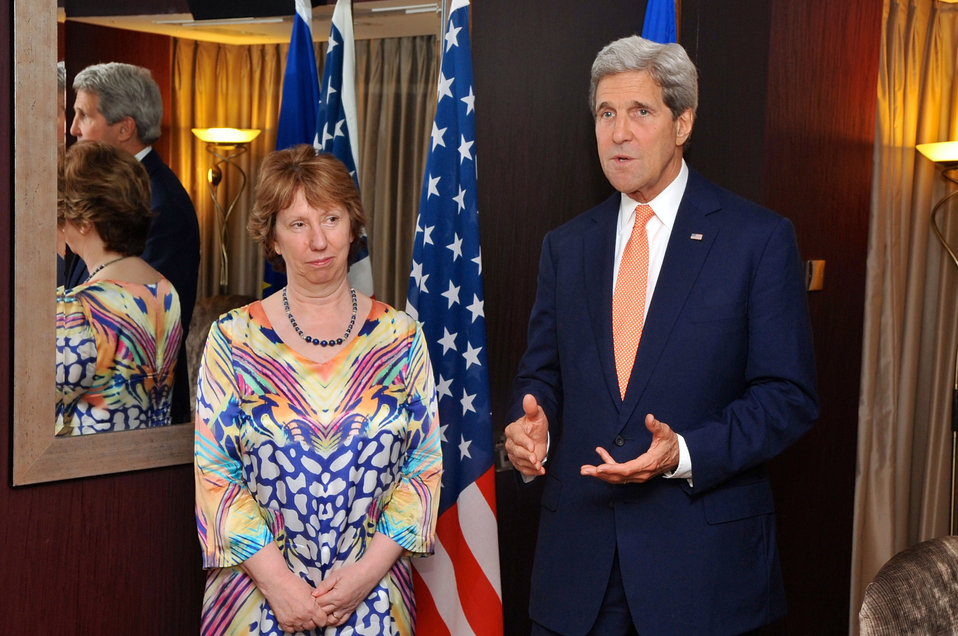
Secretary Kerry, EU Representative Ashton Address Reporters in London

U.S. Secretary of State John Kerry and European Union High Commissioner Catherine Ashton address reporters before a bilateral meeting in London, UK, on June 13, 2014.